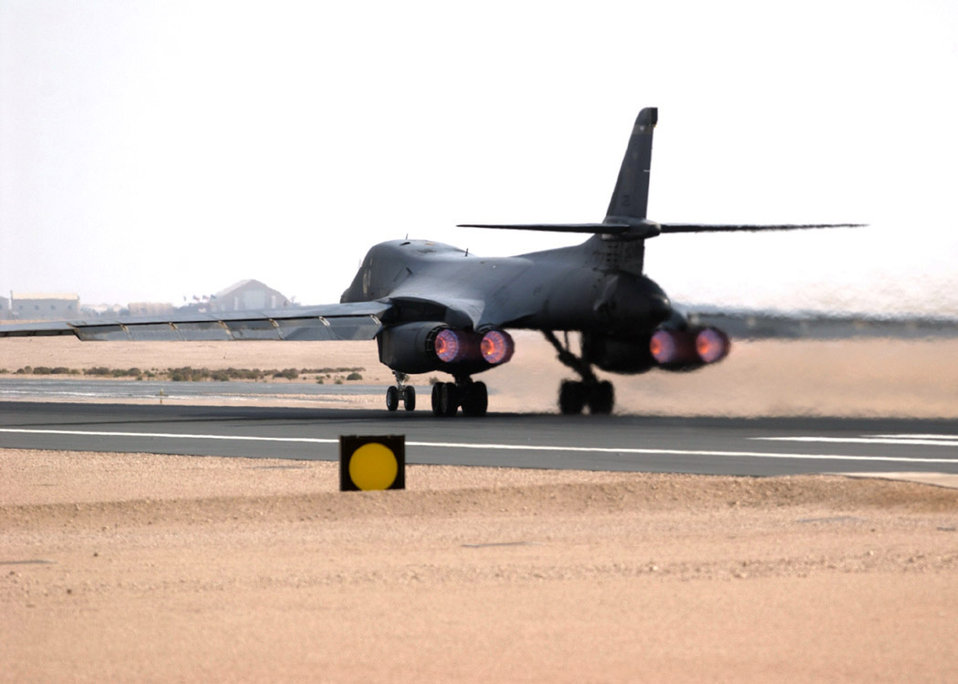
Airpower summary

SOUTHWEST ASIA -- An Air Force B-1B Lancer takes off from an air base in Southwest Asia. The B-1B flies a wide range of mission in support of Operations Enduring and Iraqi Freedom.